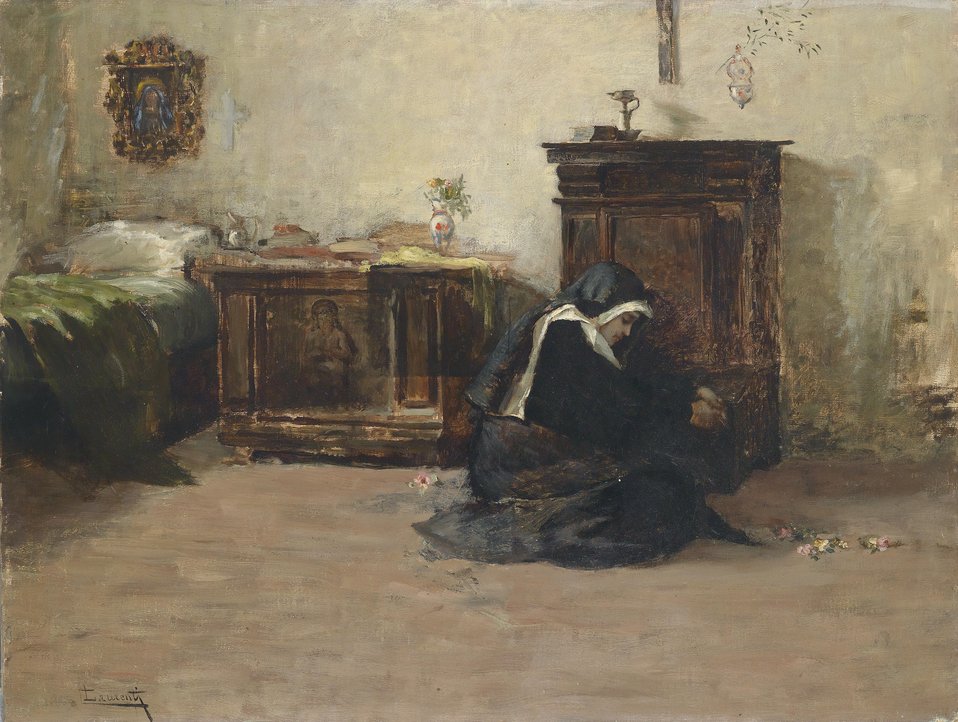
Junge Klosterschwester in ihrer Zelle, signiert Laurenti, Öl auf Leinwand, 47,5 x 61,3 cm